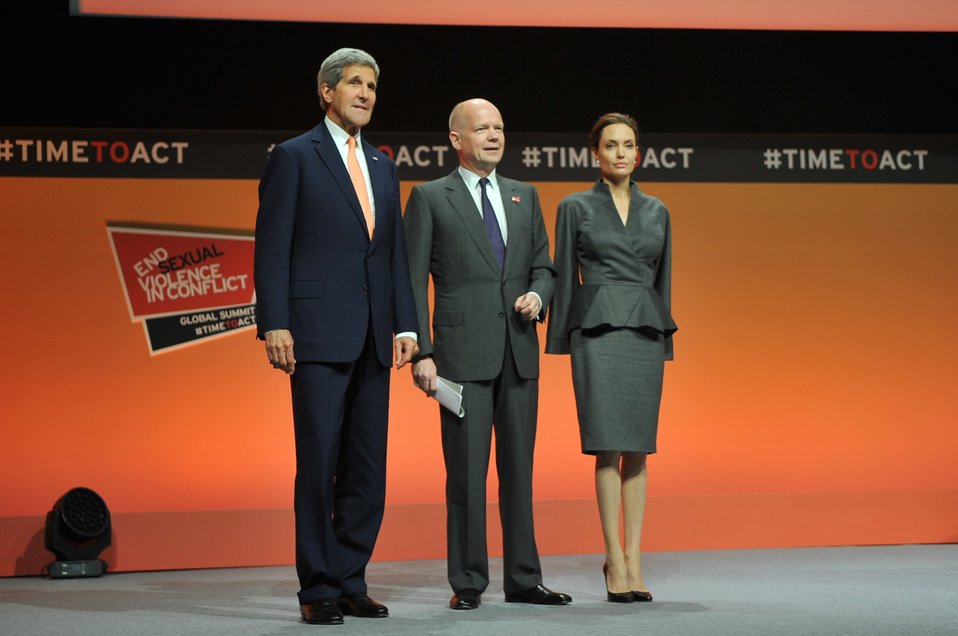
Secretaries Kerry, Hague Join Actress Jolie in Condemning Sexual Violence in Conflict

U.S. Secretary of State John Kerry, British Foreign Secretary William Hague and UN Special Envoy Angelina Jolie pose for photographers in London before a news conference at the conclusion of the 2014 Global Summit to End Sexual Violence in Conflict, on June 13, 2014.